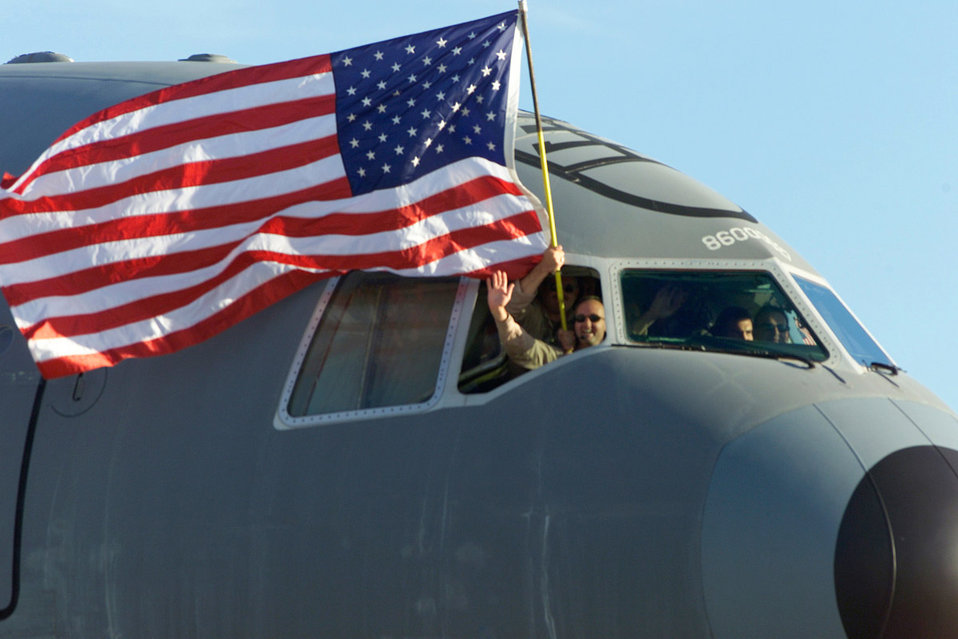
Homecoming

OPERATION ENDURING FREEDOM -- A McGuire Air Force Base, N.J., KC-10A Extender taxis down the flightline to an anxiously waiting crowd of family members and reservists Oct. 19. About 50 Air Force reservists returned to McGuire after spending a month overseas in support of Operation Enduring Freedom.